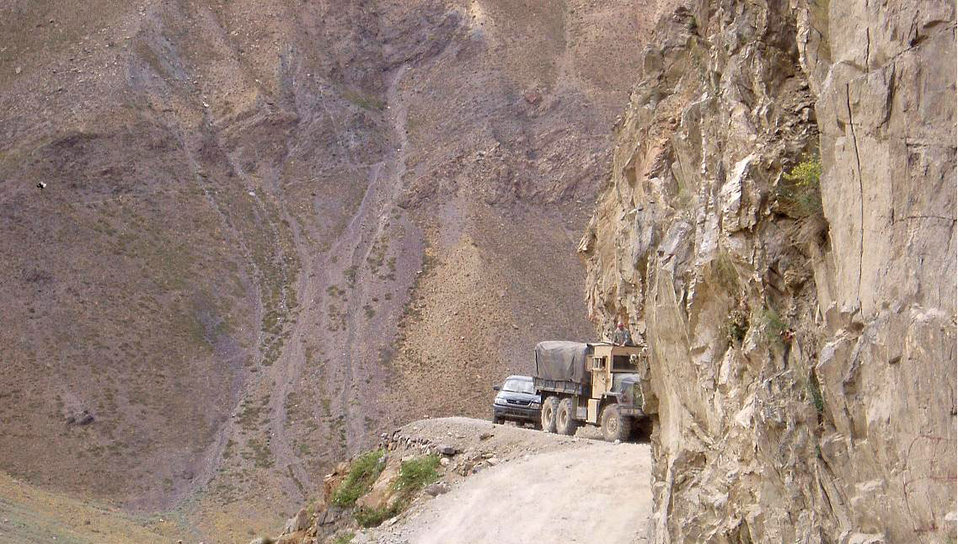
Multi-service team delivers goods to Afghan village

A truck loaded with humanitarian assistance supplies makes its way along a narrow road in the Panjshir Province, Afghanistan, on Monday, June 12. With help of a ground guide and spotter in the truck's turret, the multi-service supply convoy delivered approximately four tons of food to the village of Dara.